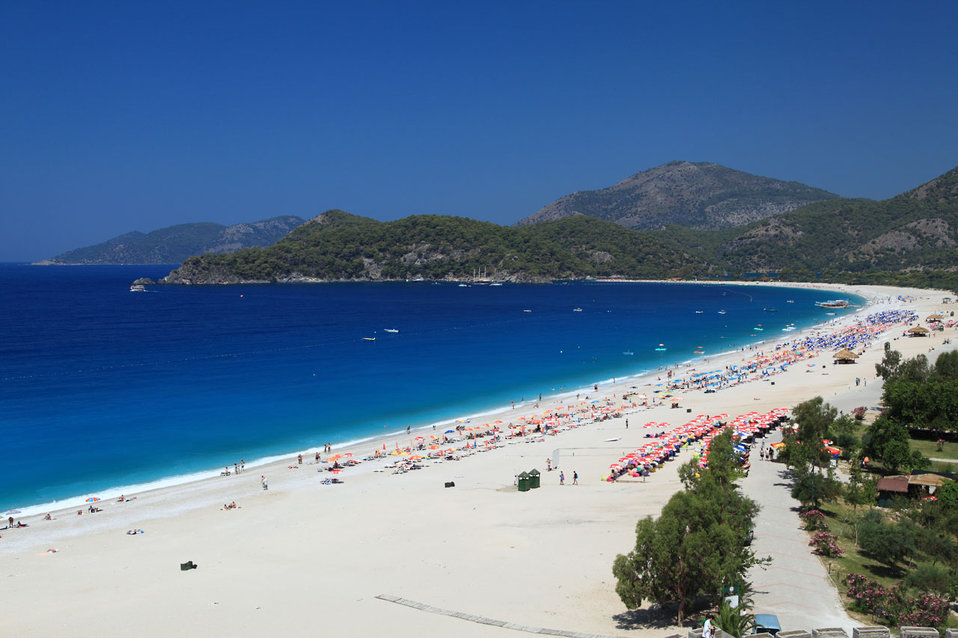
View at the beach in oludeniz - turkey.